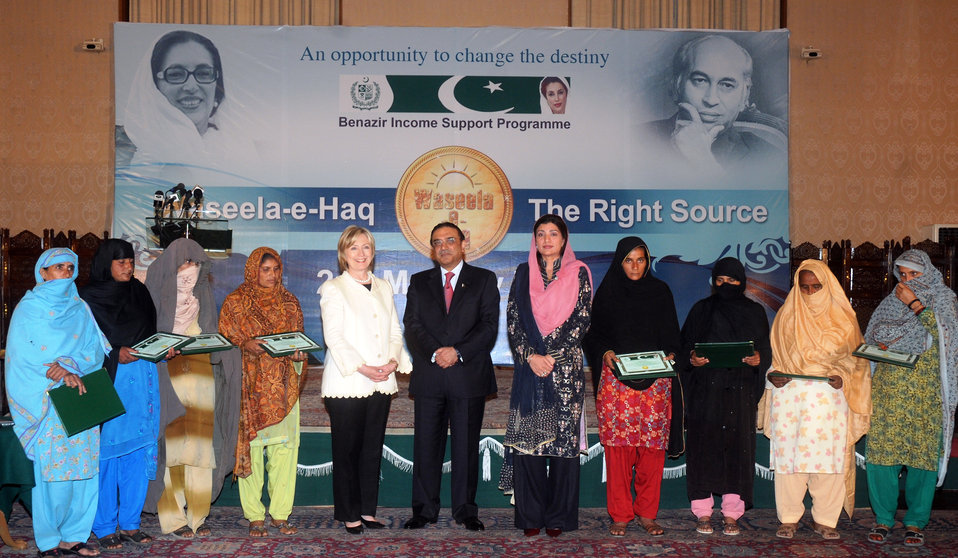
Secretary Clinton and Pakistani President With Lottery Winners

U.S. Secretary of State Hillary Rodham Clinton, Pakistan President Asif Ali Zardari, and chairperson of
Benazir Income Support Program Farzana Raja with the monthly lottery winner female recipients of the program at the Presidential Palace in Islamabad, Pakistan October, 28, 2009.